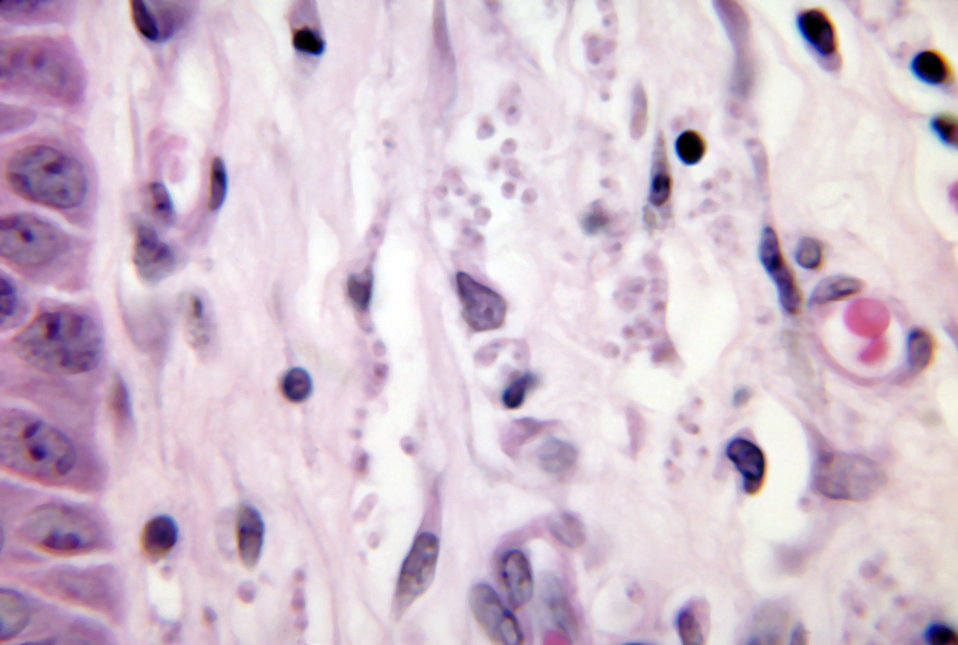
Histopathology of leishmaniasis of skin due to Leishmania brasiliensis. Parasite.